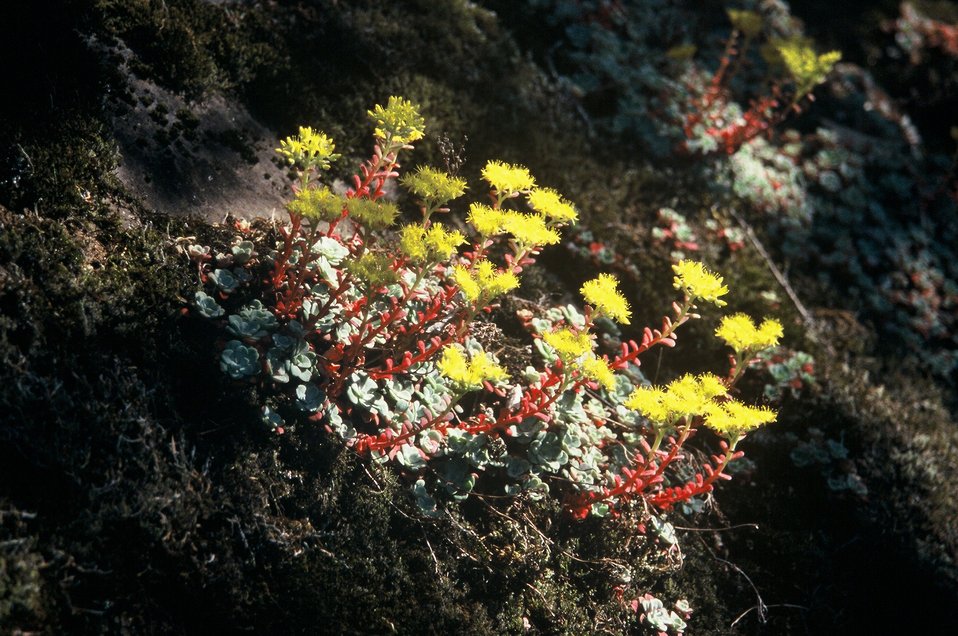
Wild section of the Rogue River from Grave Creek to Foster Bar May 19 to May 22.